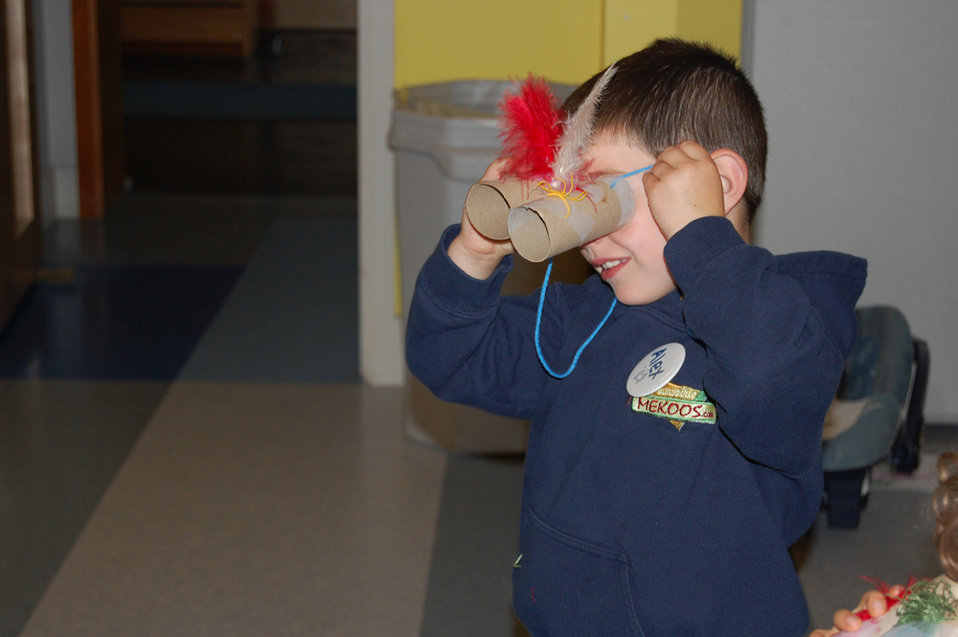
Sense of Wonder Camp

Sring 2009 session of the Sense of Wonder Camp, a camp for children ages 3-4 at Parker River National Wildlife Refuge.Credit: Kate Toniolo/USFWS